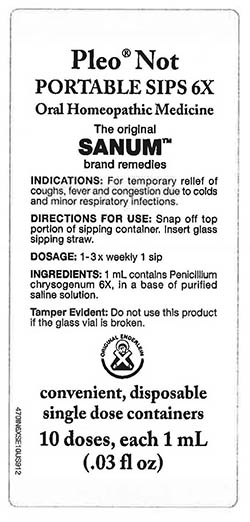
RECALLED – Homeopathic Drug Products

March 18, 2014 – Product Recall – Terra-Medica Issues Voluntary Nationwide Recall of Specified Lots of Pleo Homeopathic Drug Products Due to the Potential for Undeclared Penicillin.